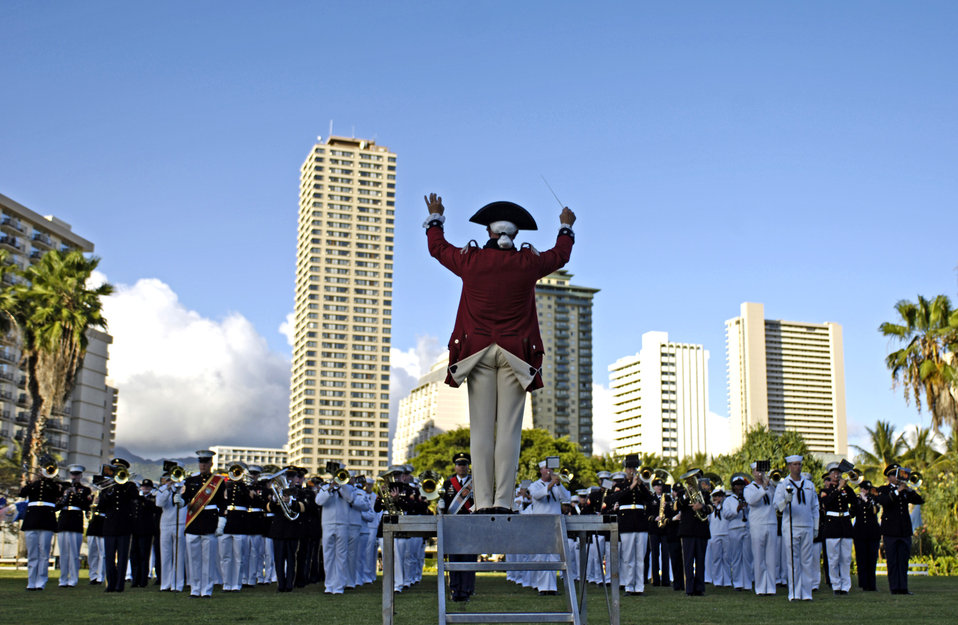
Twilight Tattoo

Chief Warrant Officer Gregory Balvanz conducts a multi-service band at the 10th Annual Twilight Tattoo at Fort DeRussy, Hawaii, on Saturday, May 13, 2006. The annual event features bands from all the services. Warrant Officer Balvanz is commander of the Old Guard Fife and Drum Corps.